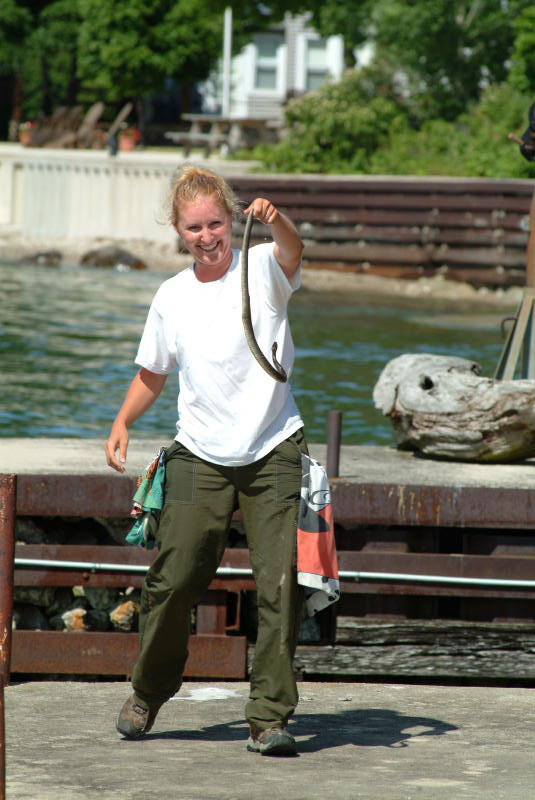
Recovered Lake Erie watersnake (Nerodia sipedon insularum)